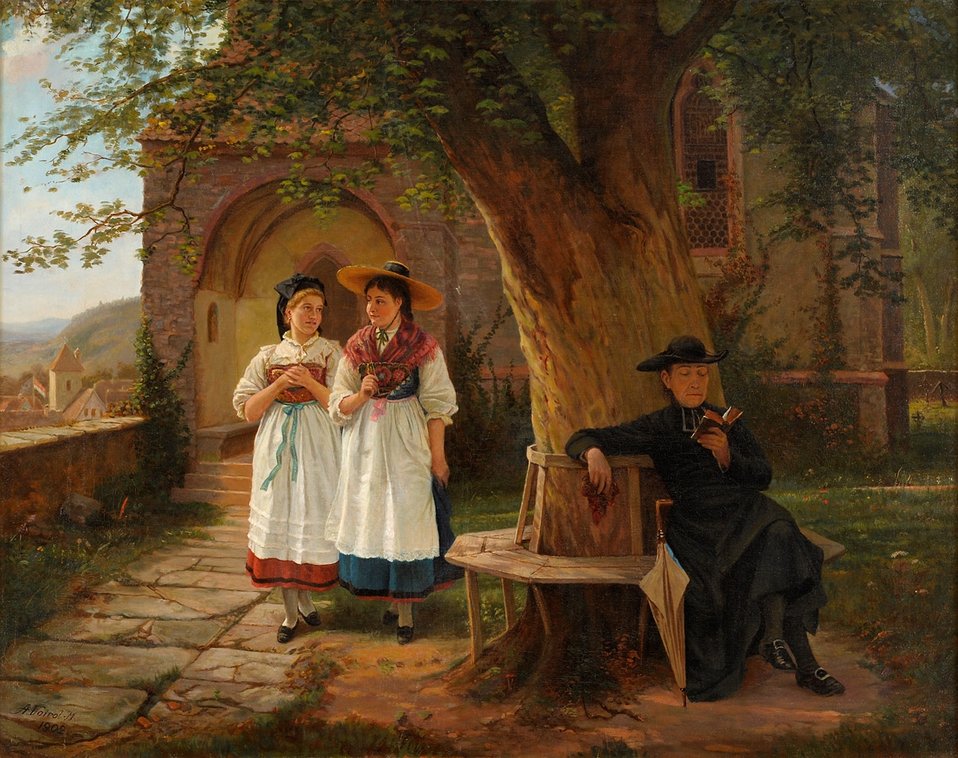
Ein stilles Plätzchen. Signiert. Datiert 1902. Öl/Lwd., 84 x 106 cm